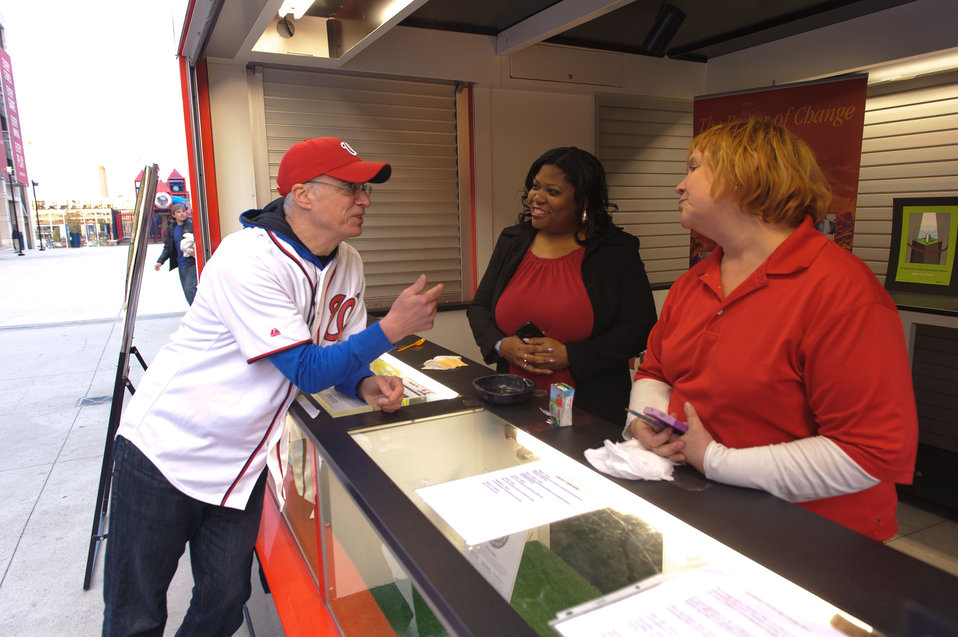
April 22, 2013 – During the game EPA staff and our Acting Administrator spoke to fans about recycling

The EPA kiosk was full of fun facts. Think one beverage can, can’t make a difference?

Think again – recycling just one aluminum can saves enough energy to power a laptop for over 5 hours. Find out how much energy you can save

Keep up with our Acting Administrator @ www.facebook.com/EPAadmin